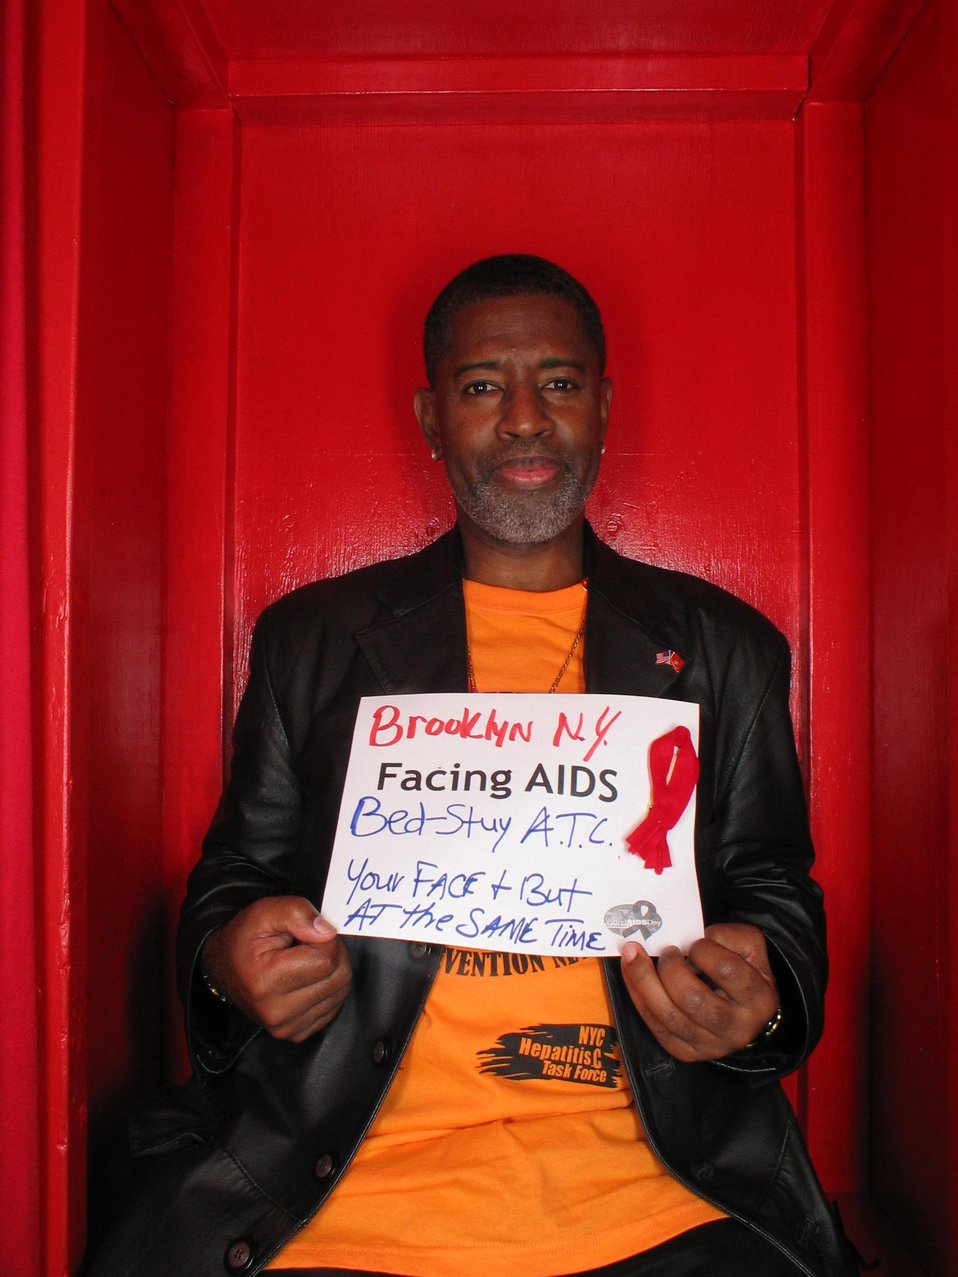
Brooklyn NY Facing AIDS